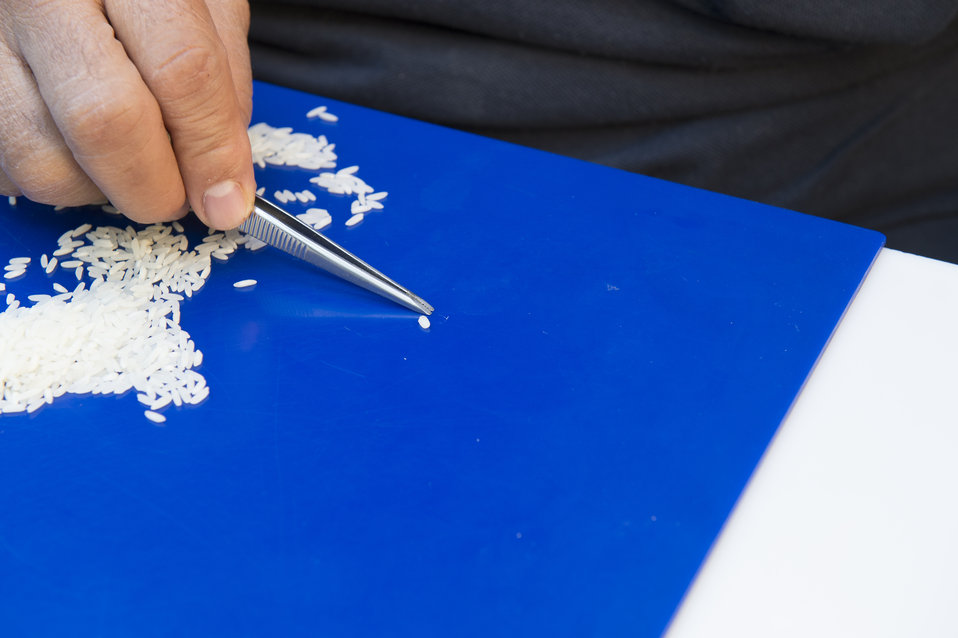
U.S. Department of Agriculture (USDA) Grain Inspection, Packers and Stockyards Administration (GIPSA) Federal Grain Inspection Service (FGIS) employee examines rice samples at the FGIS inspection laboratory in New Orleans, LA on Monday, Nov. 18, 2013.